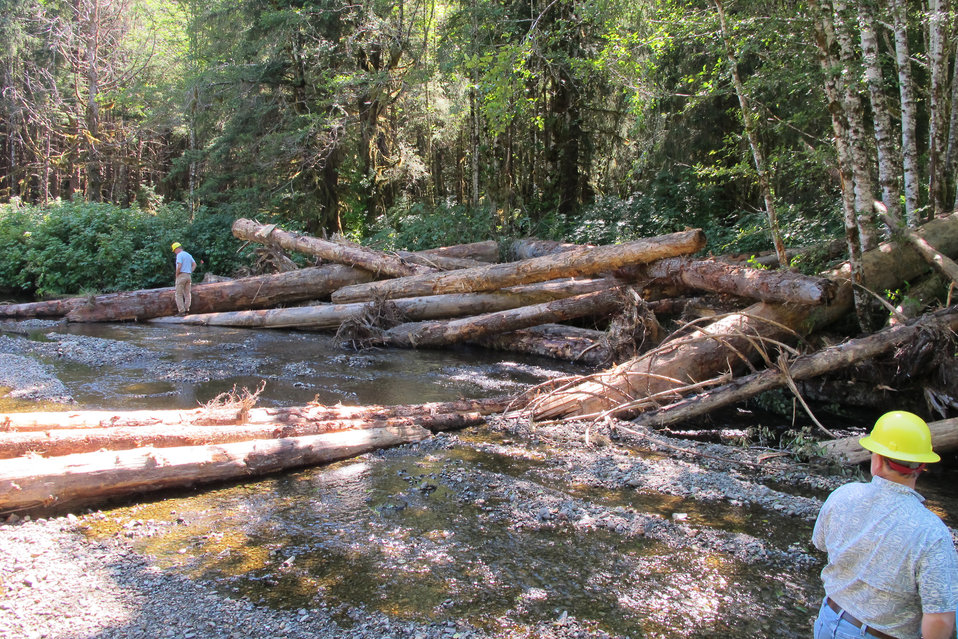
Salmon restoration logs

Forest Service employees Don Martin and John Lane inspect an in-stream restoration structure on 12-mile Creek, Prince of Wales Island, AK.